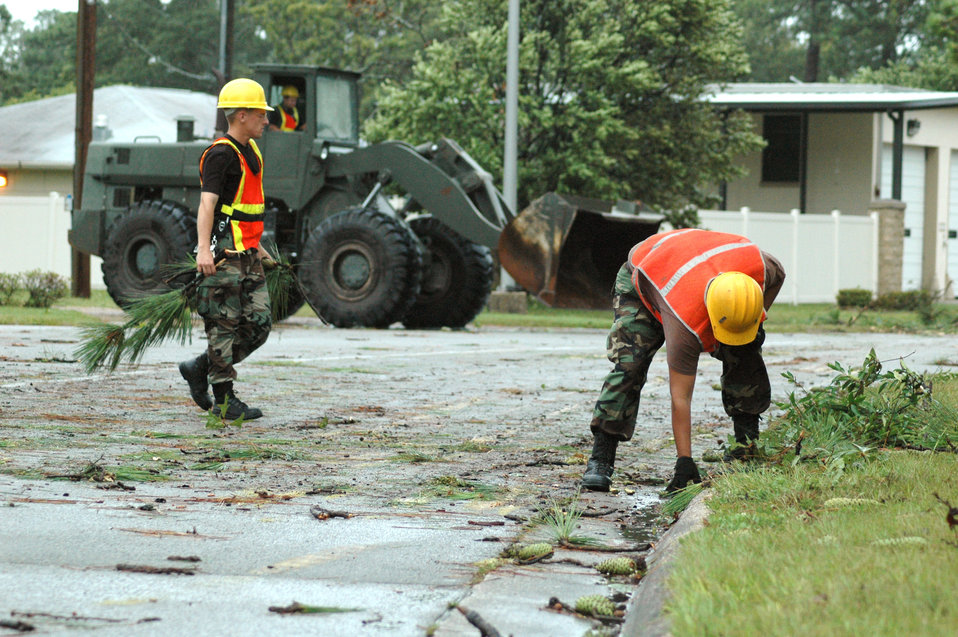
Eglin spared as Hurricane Dennis flexes

EGLIN AIR FORCE BASE, Fla. -- Airman 1st Class Brian Mikua (left) and Senior Airman Michael Rambaran pick up debris from fallen trees after Hurricane Dennis passed over here July 10. The Airmen are assigned to the 796th Civil Engineer Squadron.